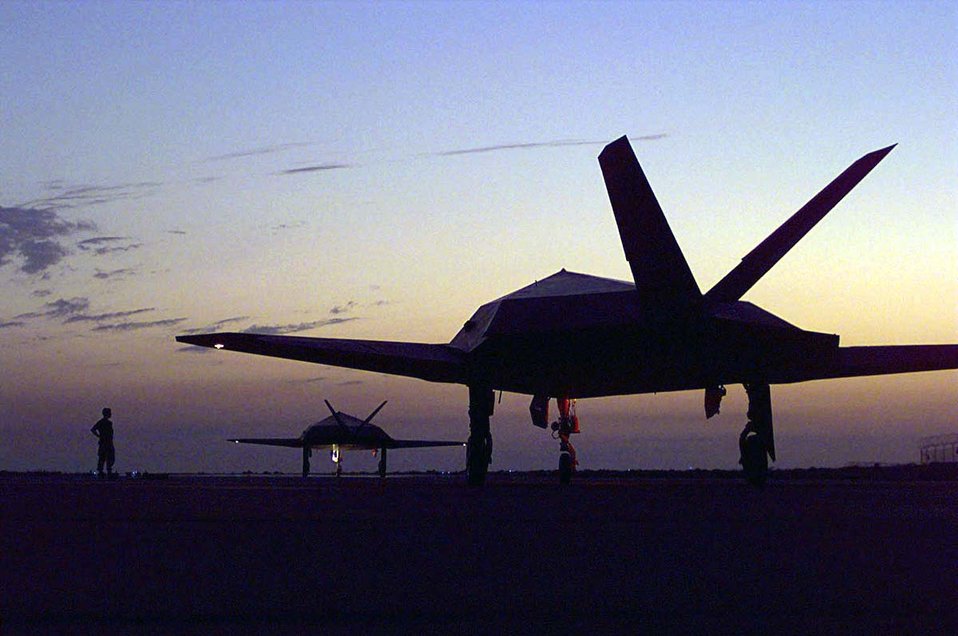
Holding

1990's -- AL JABER AIR BASE, Kuwait -- Several F-117 Nighthawks belonging to the 8th Fighter Squadron, 49th Fighter Wing, Holloman Air Force Base, N. M., hold for takeoff on March 13, 1998. The 8th FS is deployed here in support of the Southwest Asia buildup.